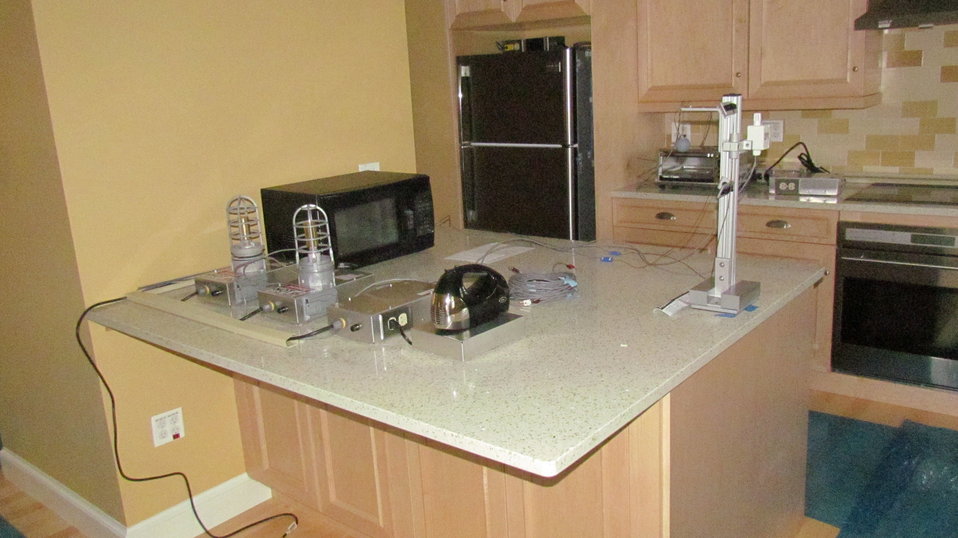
NZERTF kitchen with simulated/actual loads in place.